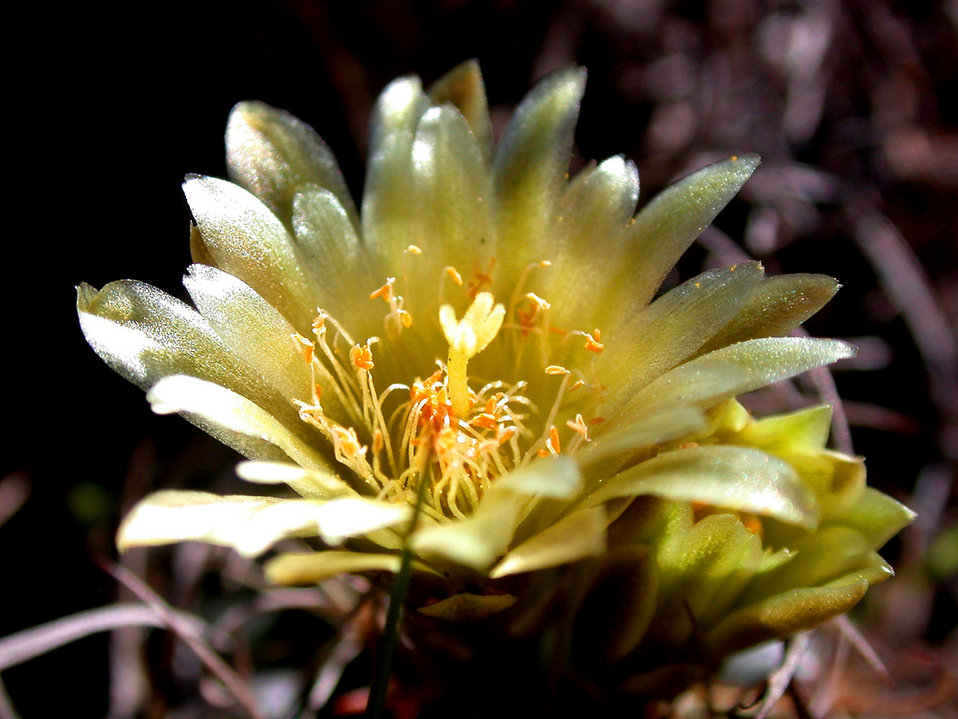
Endangered Tobusch fishhook cactus (Ancistrocactus tobuschii)

Tobusch fishhook cactus flower.